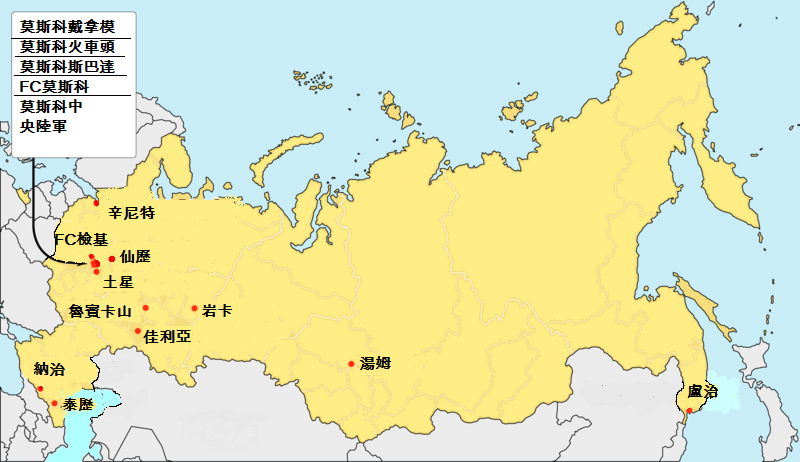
中文（繁體）: 俄甲